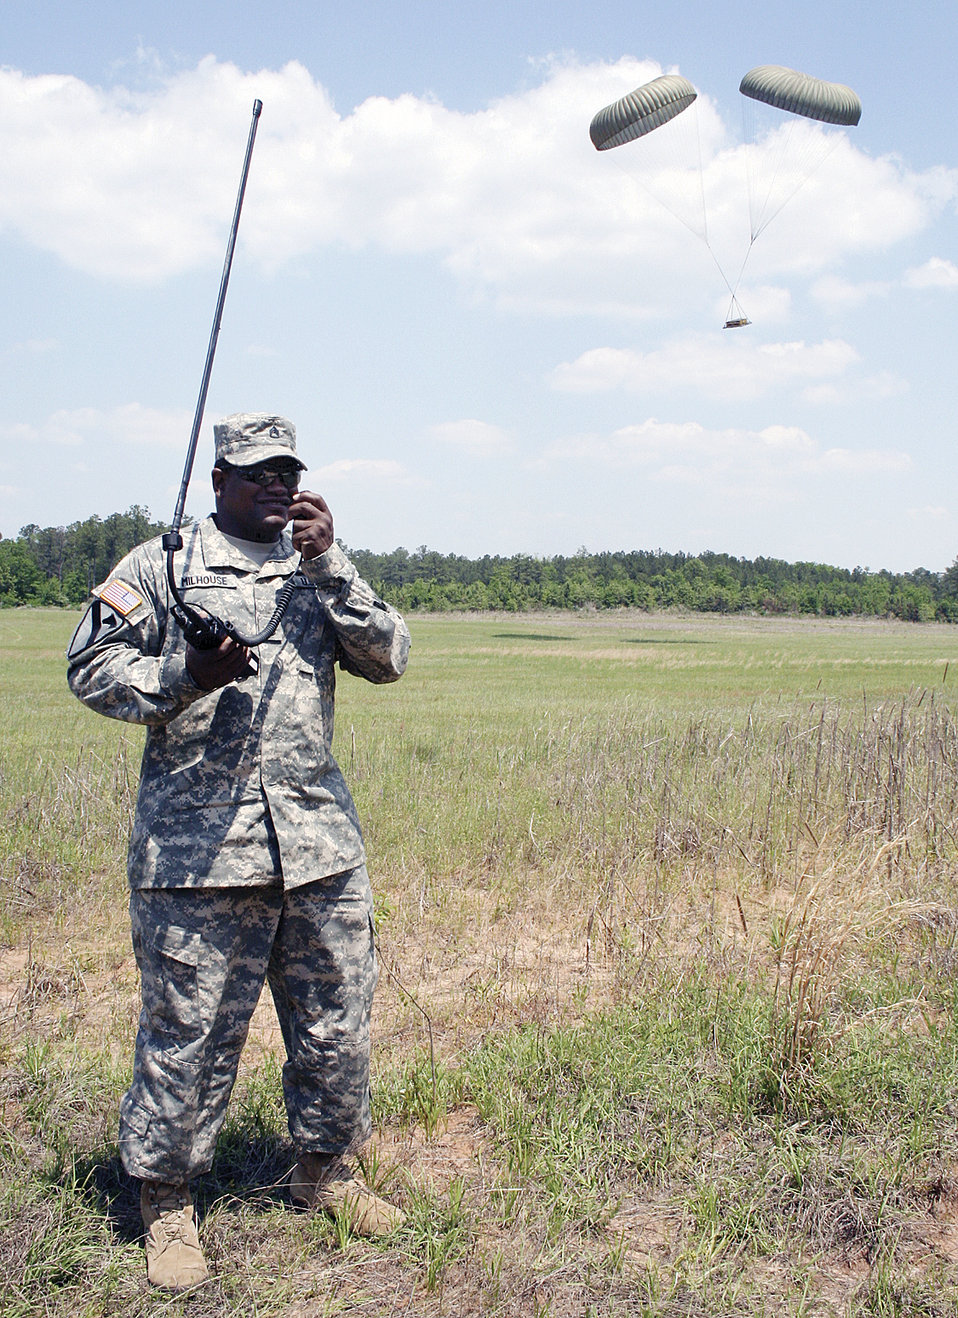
Army, Air Force open communications

Army Staff Sgt. Andre Milhouse of the 551st Signal Battalion communicates with a C-130 Hercules crew from the 700th Airlift Squadron out of Dobbins Air Reserve Base, Ga., as airdropped cargo comes down behind him. The joint training is the first of its kind at Fort Gordon, Ga., and will be added to the final capstone event of Army communications technical training at Fort Gordon.